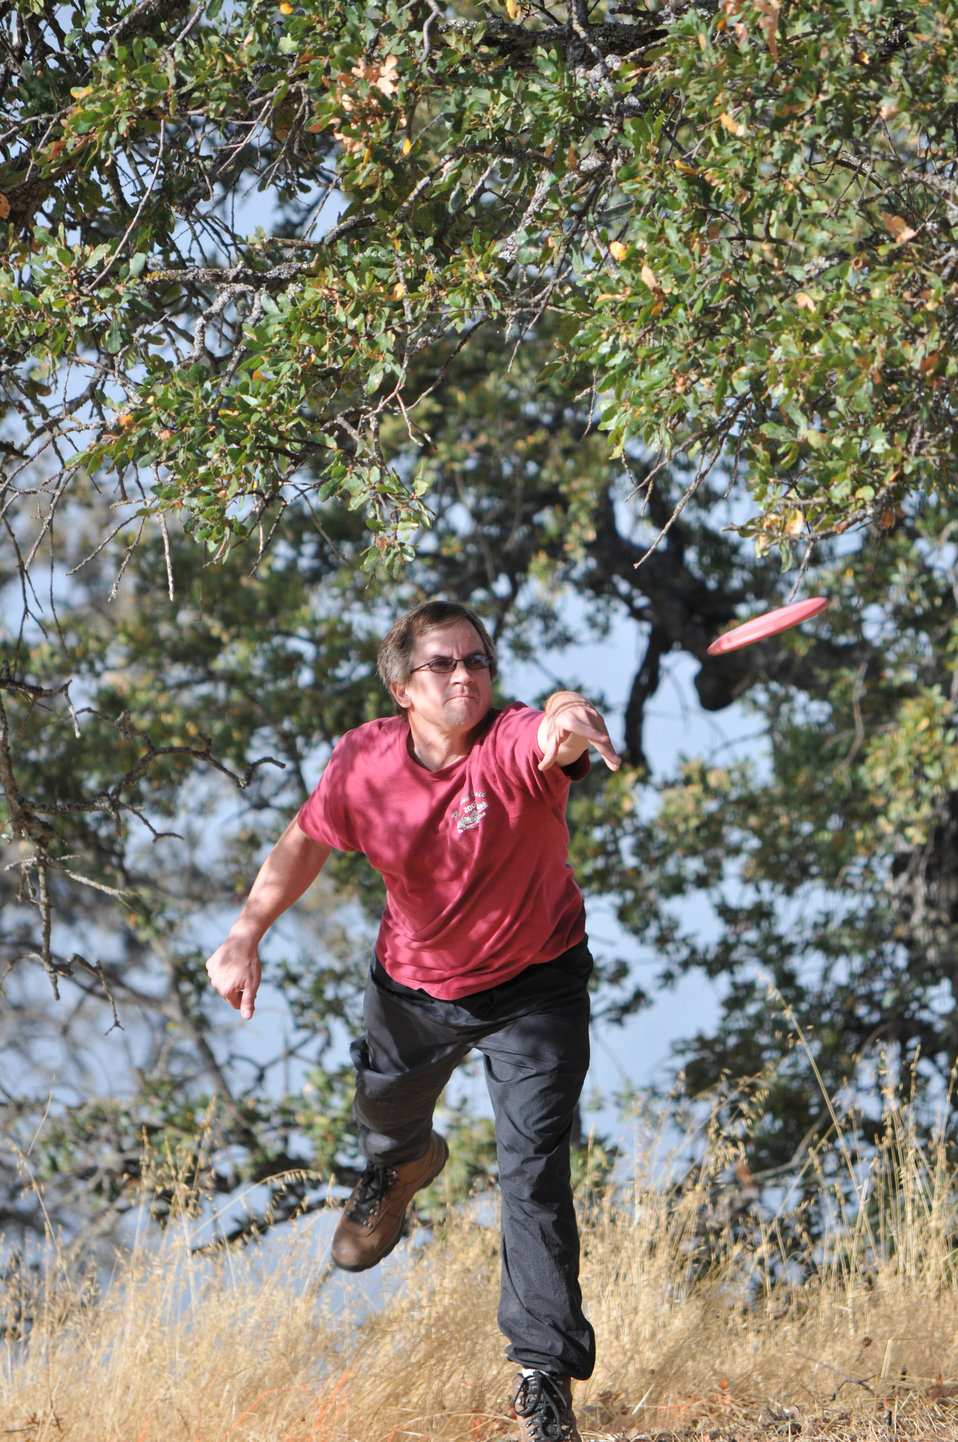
BLACK BUTTE LAKE, Calif. (Oct. 18, 2010) -- A disc golfer putts during the Professional Disc Golf Association's Norcal Series Championships here Oct. 16. The U.S. Army Corps of Engineers Sacramento District’s Black Butte hosted the tournament Oct. 15-17 at its new disc golf course, built on park lands by The Orland Aces disc golf club under a partnership with the Corps. More than 150 disc golfers from as far as Texas competed in the tournament.